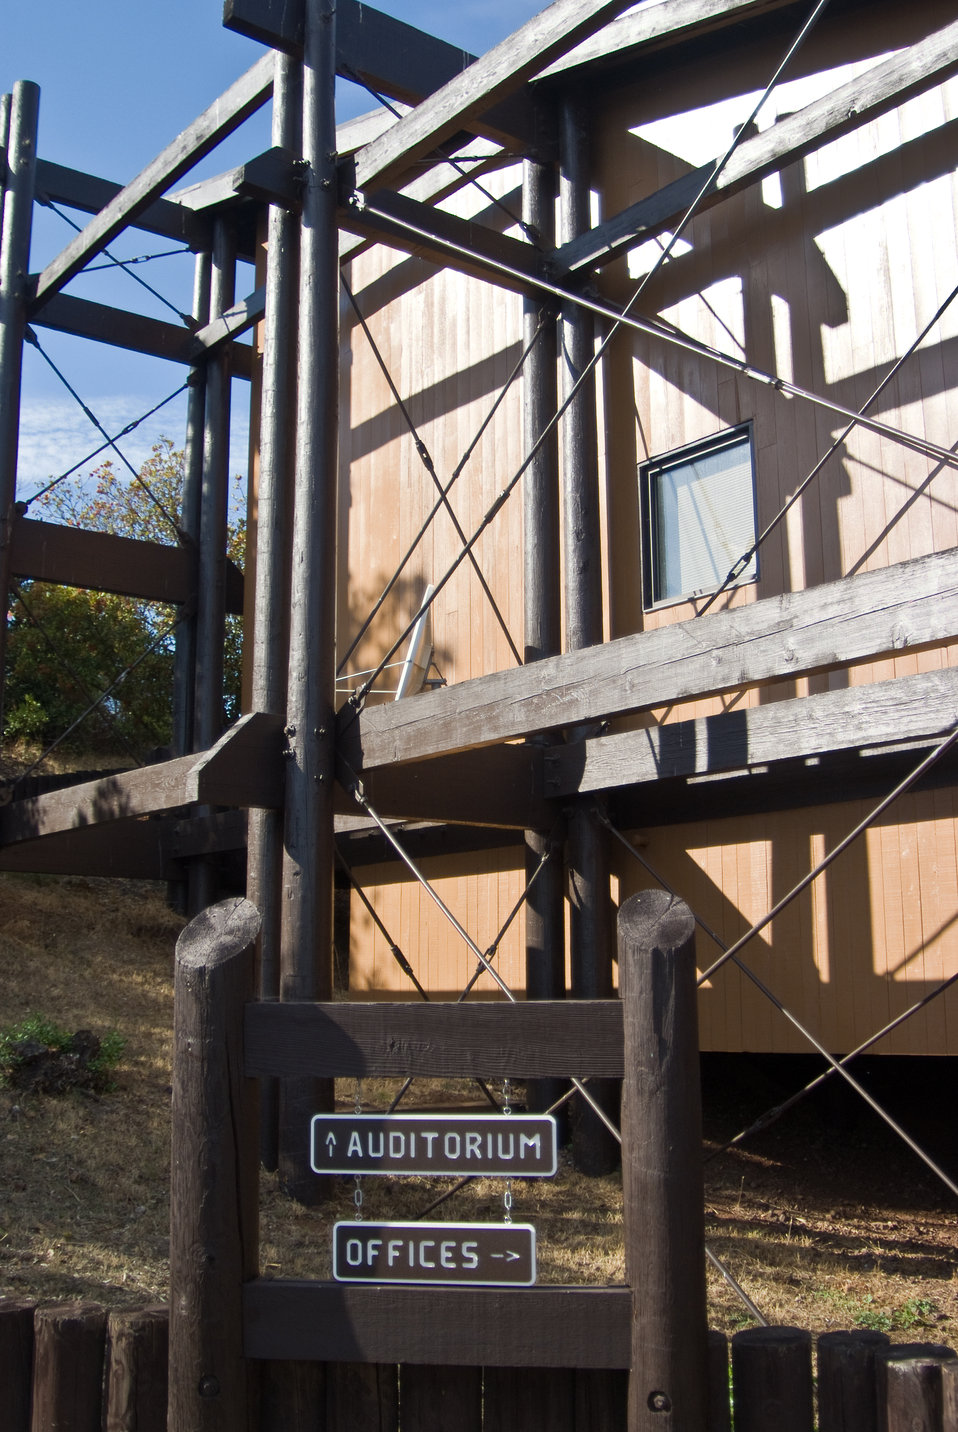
Administrative Office at Don Edwards San Francisco Bay NWR

Don Edwards San Francisco Bay National Wildlife Refuge. This is a photo of the newly completed administrative office remodel using ARRA funds.